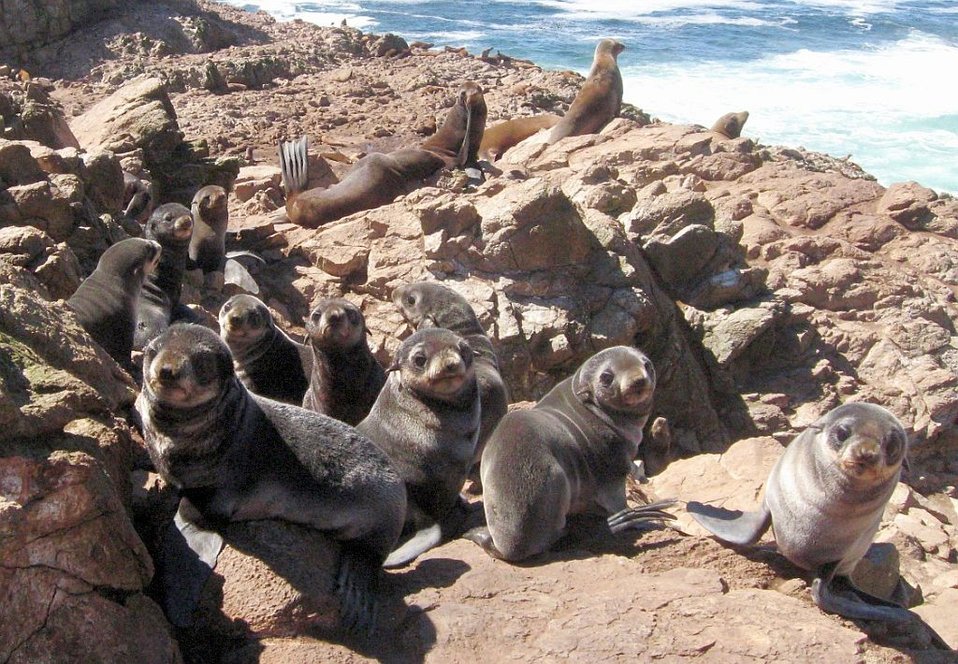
Farallon Refuge

Fur seals in the Farallon National Wildlife Refuge wilderness, CA.